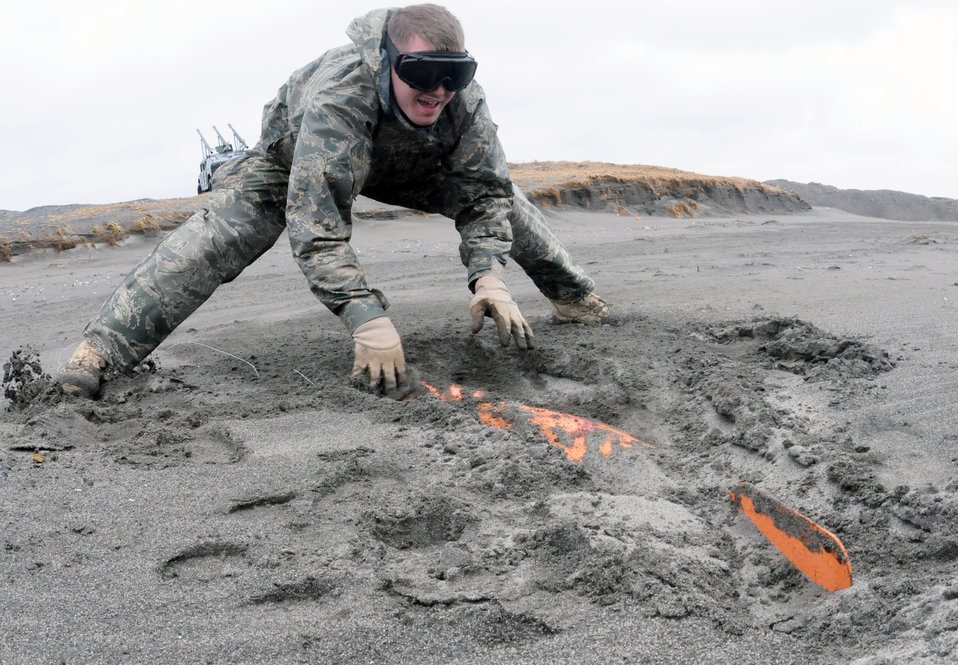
Look what I found!

Staff Sgt. Ryan Johnson uncovers a dummy bomb unit April 8, 2011, at Misawa Air Base, Japan, as part of the recovery effort in support of Operation Tomodachi. Sergeant Johnson is an explosive ordnance disposal technician assigned to the 35th Civil Engineer Squadron.